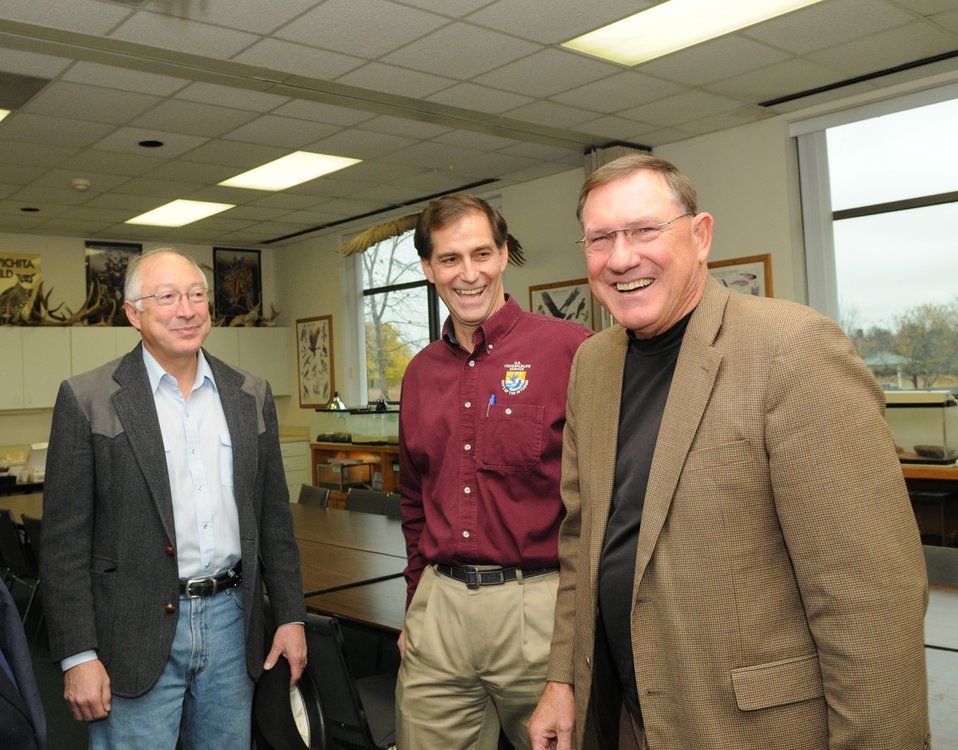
Conservation Principals Meeting

Interior Secretary Ken Salazar, USFWS Director Dan Ashe, and Mike Hayden at the Conservation Principals Meeting.